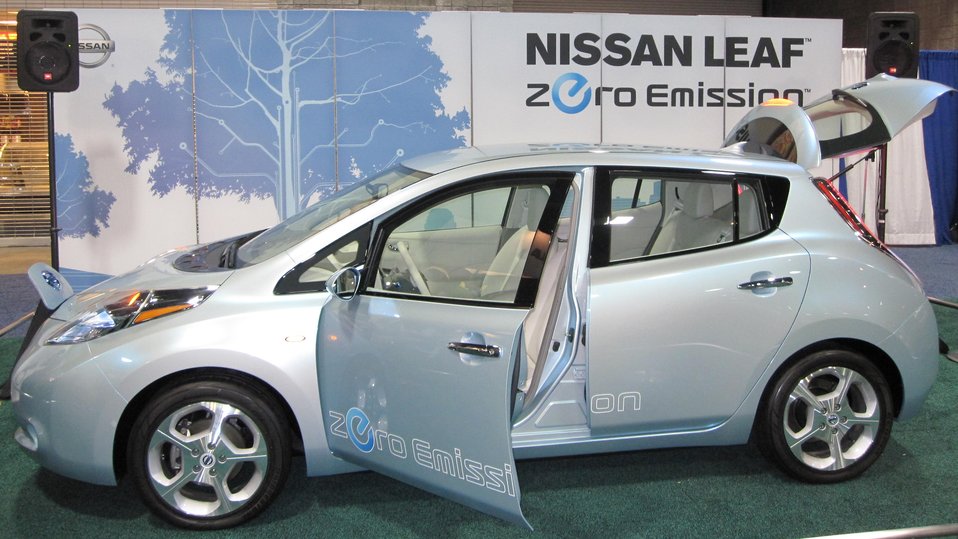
Hybrid Electric Vehicle (HEV), Plug-In Hybrid Electric Vehicle (PHEV), and Battery Electric Vehicle (BEV) on display at the 2010 Electric Vehicle Technology Demonstration in Washington, DC.